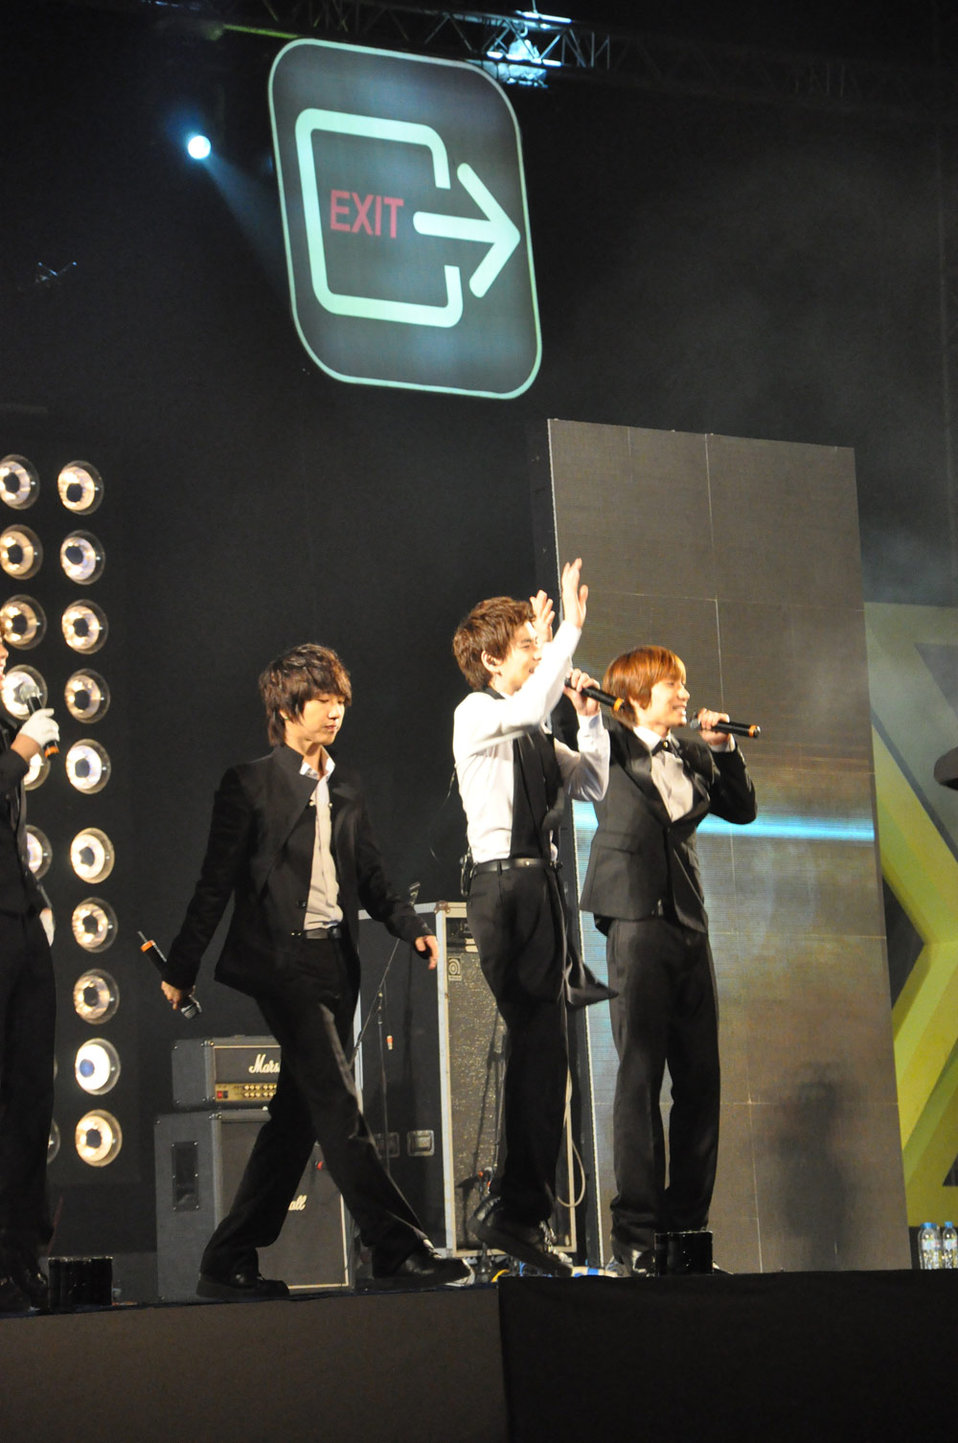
MTV EXIT Hanoi concert March 27, 2010

Super Junior performs in Hanoi.